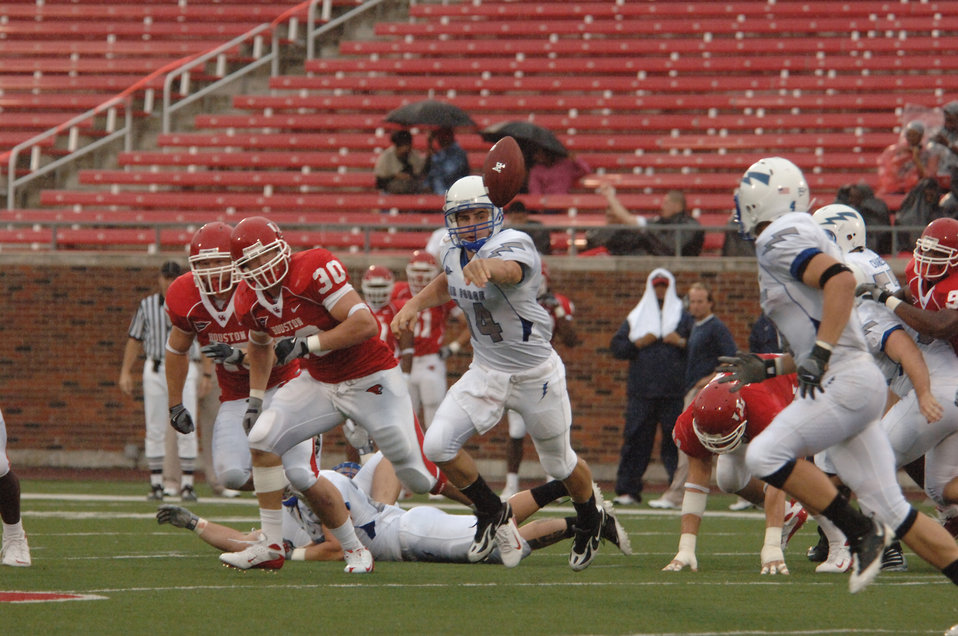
Football: Falcons hold off Cougars in wake of Hurricane Ike

U.S. Air Force Academy quarterback Shea Smith options to wide receiver Kyle Halderman to try and beat the Cougar defense to the edge Sept. 13 in Dallas. Halderman's 66 yards rushing added to a ground game that dominated the Falcons' play-calling, as the falcons ran the ball 71 of 78 plays for 380 yards rushing in their 31-28 win over Houston.